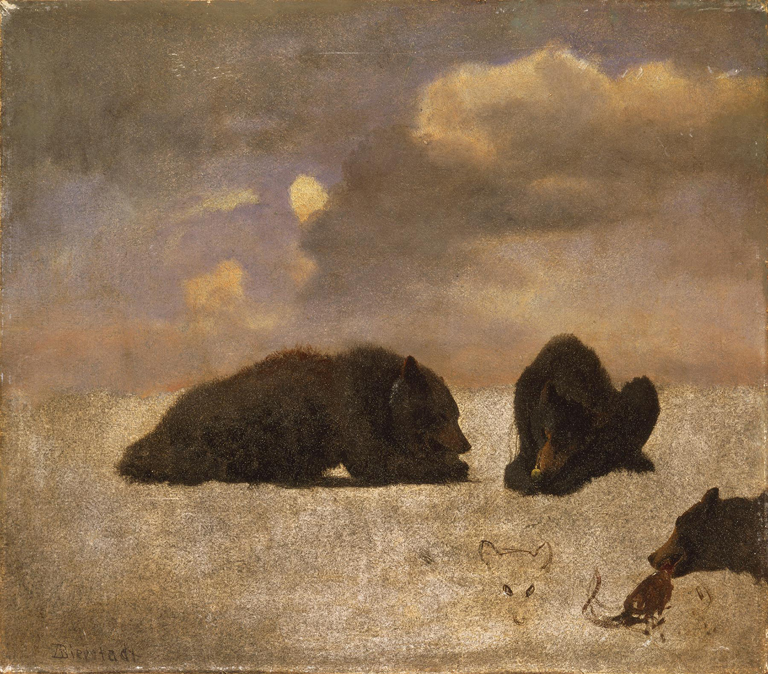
Albert Bierstadt - Grizzly Bears